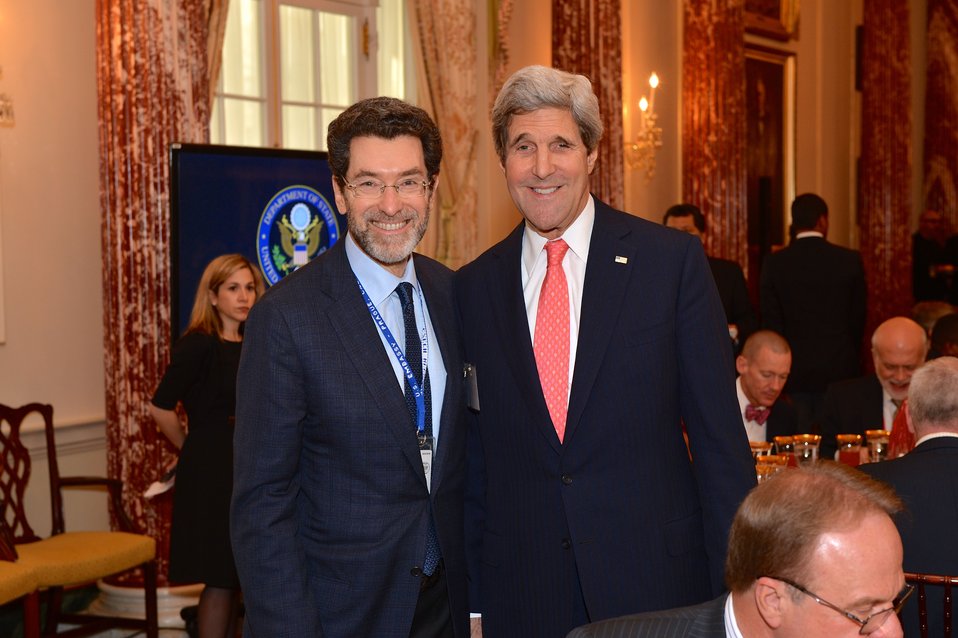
Secretary Kerry Chats With Ambassador Eisen

During a lunch discussion at the Global Chiefs of Mission Conference, U.S. Secretary of State John Kerry chats with U.S. Ambassador to the Czech Republic Norman Eisen, at the U.S. Department of State in Washington, D.C., on March 11, 2014.